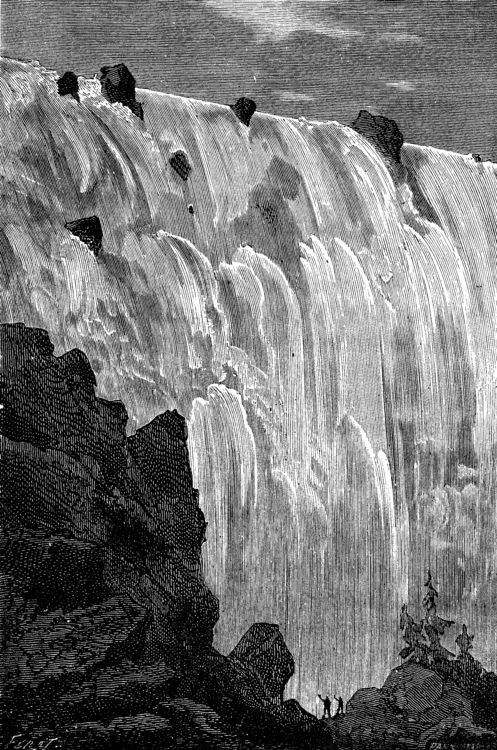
An illustration from Jules Verne's novel 'A Floating City' (1869) drawn by Jules Férat. Polski: Ilustracja powieści Juliusza Verne'a 'Pływające miasto' (1869) autorstwa Julesa Férata. Français : Jules Verne: 'Une Ville flottante' (1869), dessins par Jules Férat. Orginal text: Français : La nature en cet endroit.